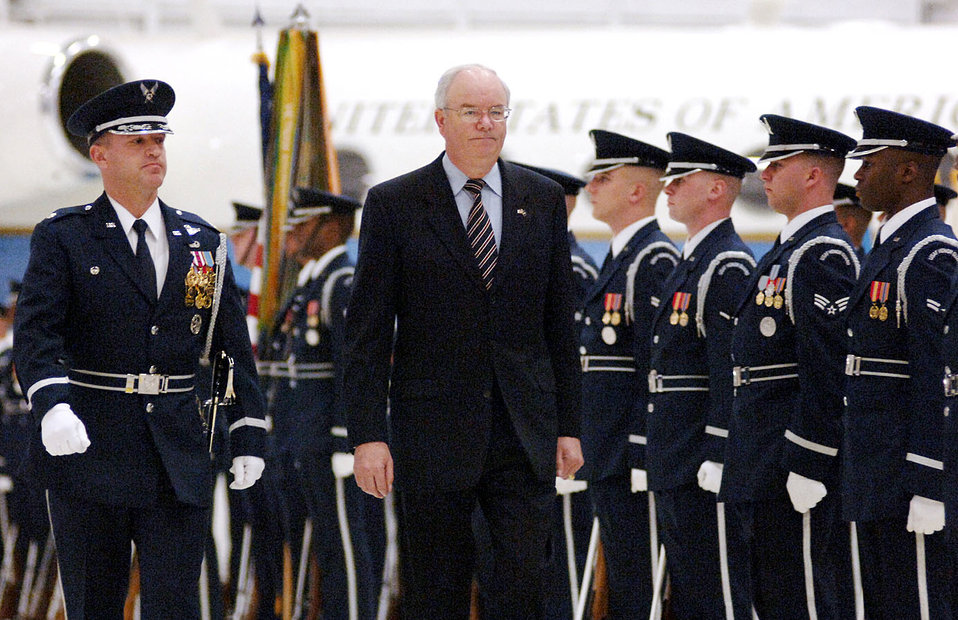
SECAF celebrates welcome to the blue

ANDREWS AIR FORCE BASE, Md. -- Secretary of the Air Force Michael W. Wynne is